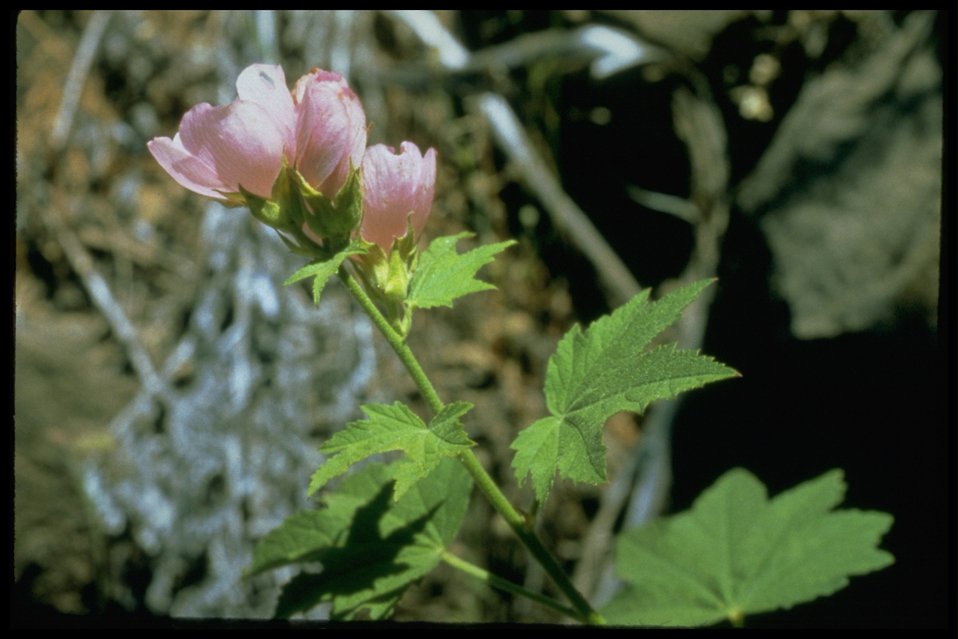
Iliamna latibracteata, commonly known as California Globe Mallow.